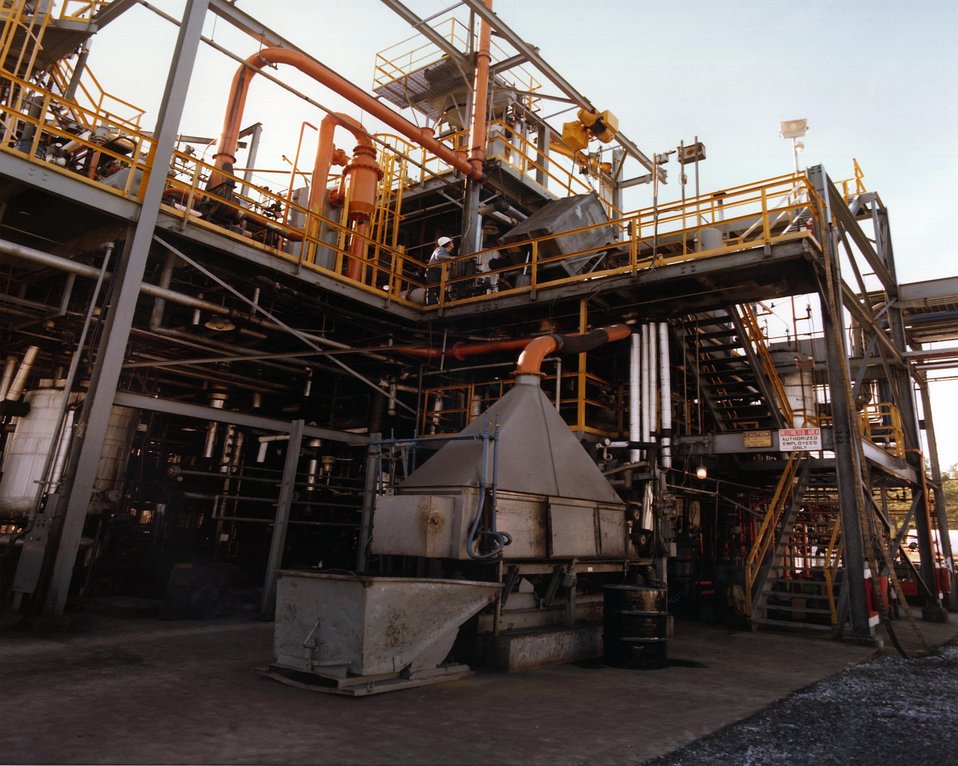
THE ADVANCED COAL LIQUEFACTION R&D FACILITY.